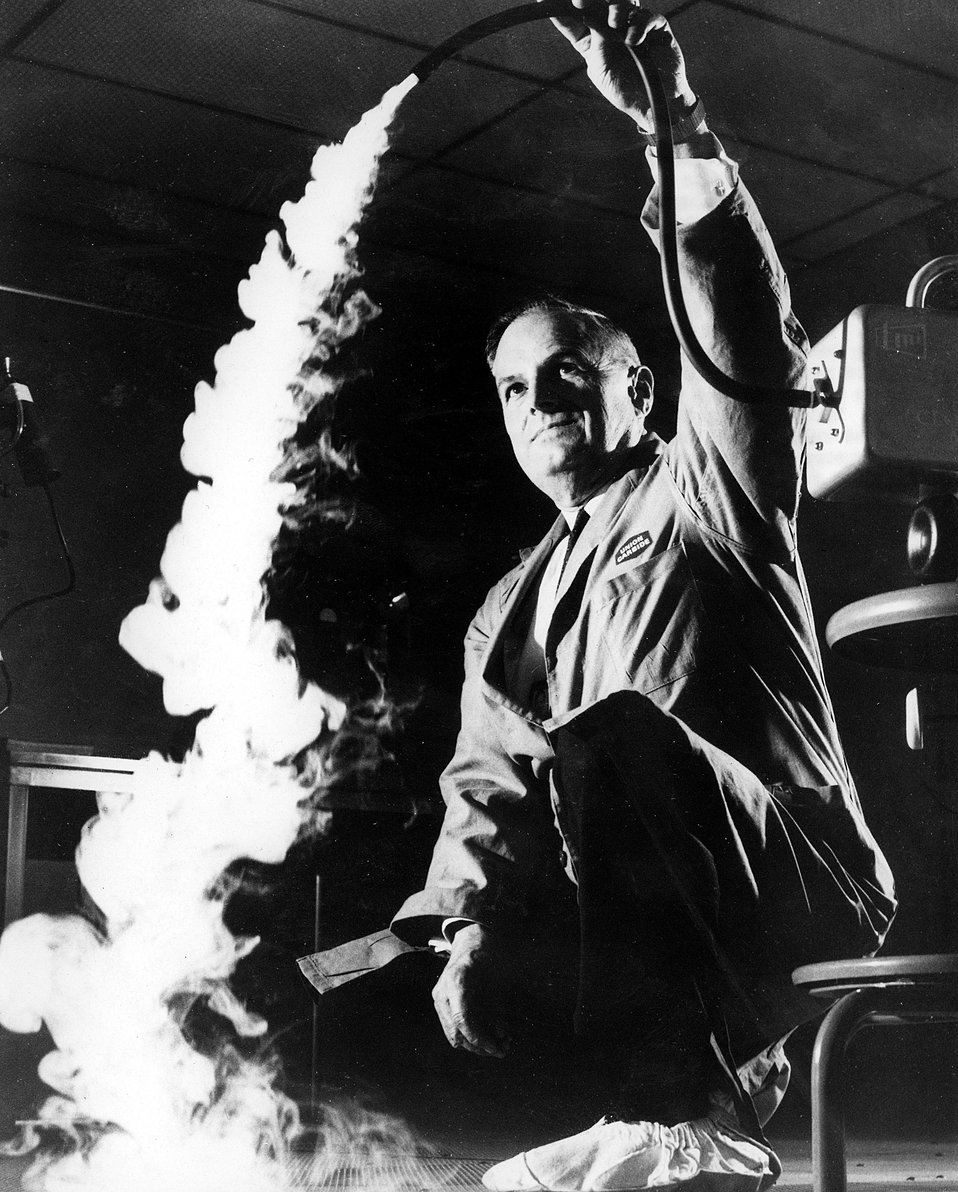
OAK RIDGE, TENNESSEE...One of the nation's cleanest rooms is this High Purity Laboratory at the Oak Ridge Y-12 Plant, operated by Union Carbide Corporation for the U.S. Atomic Energy Commission. A smoke test is being conducted to verify airflow. Circa 1966.